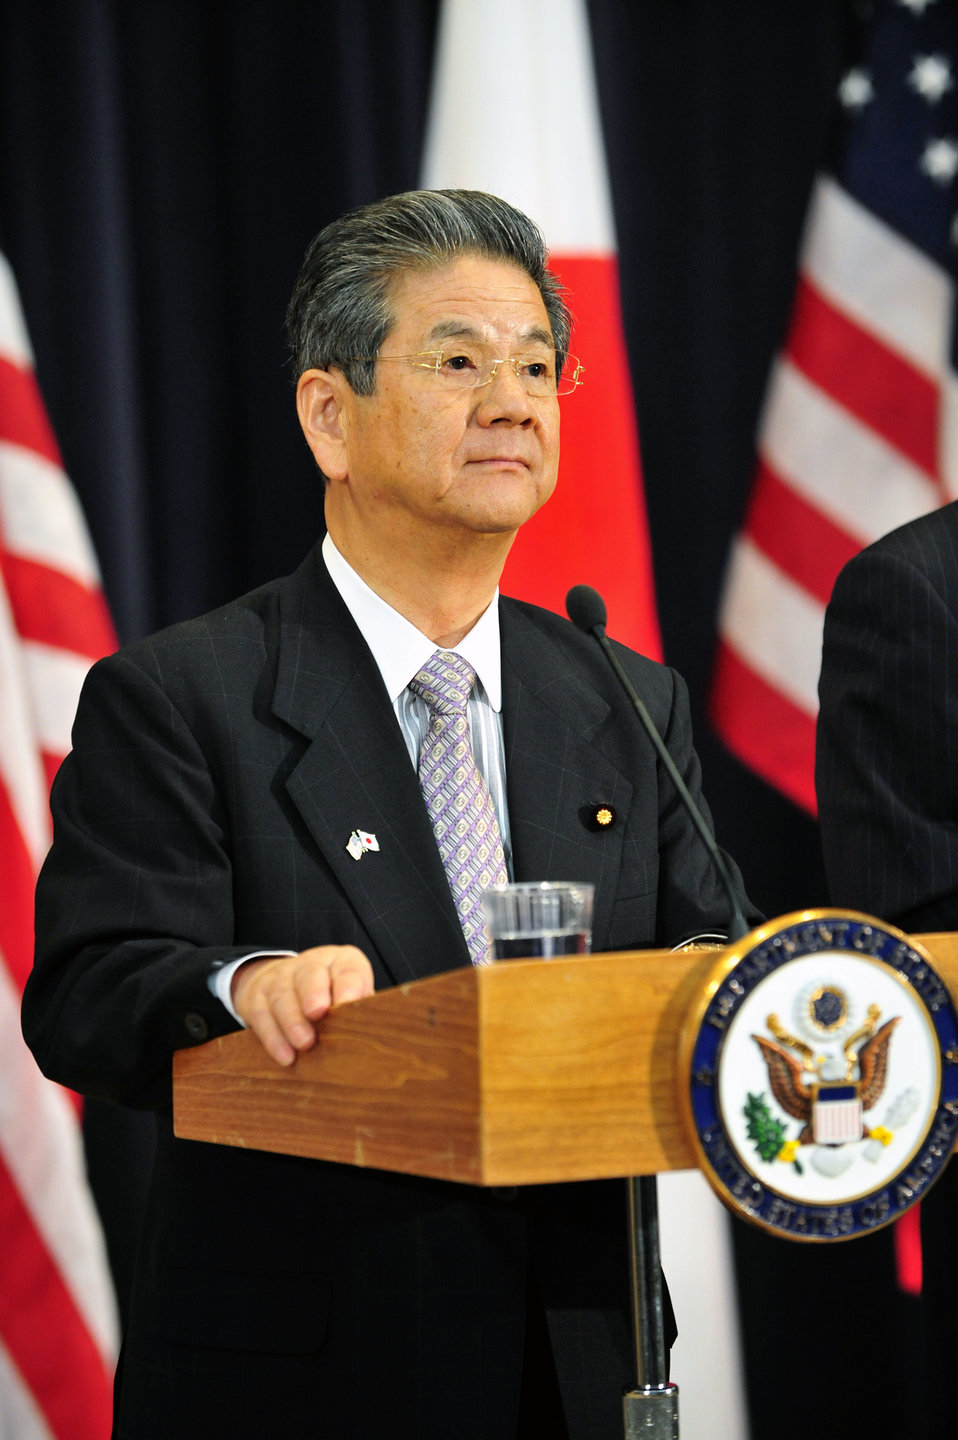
Japanese Defense Minister Kitazawa Delivers Remarks

Japanese Defense Minister Toshimi Kitazawa delivers remarks at the joint press conference after the U.S.-Japan Security Consultative Committee meeting, known as the 2 2, at the U.S. Department of State in Washington, D.C., on June 21, 2011.